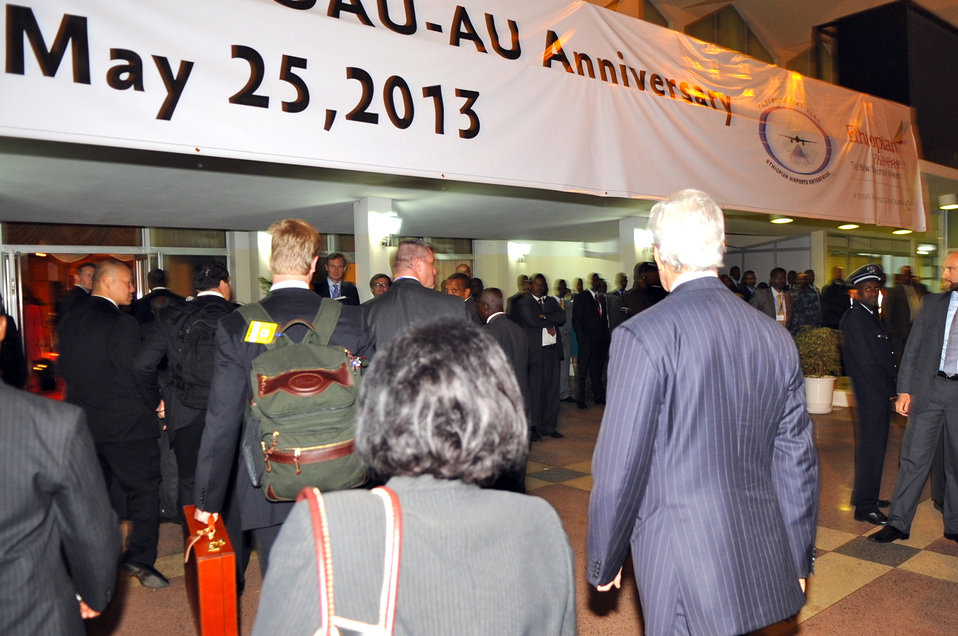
Secretary Kerry Enters the Terminal at Addis Ababa International Airport

U.S. Secretary of State John Kerry enters the terminal at Addis Ababa International Airport in Addis Ababa, Ethiopia, on May 24, 2013, for the Africa Union 50th anniversary meeting.